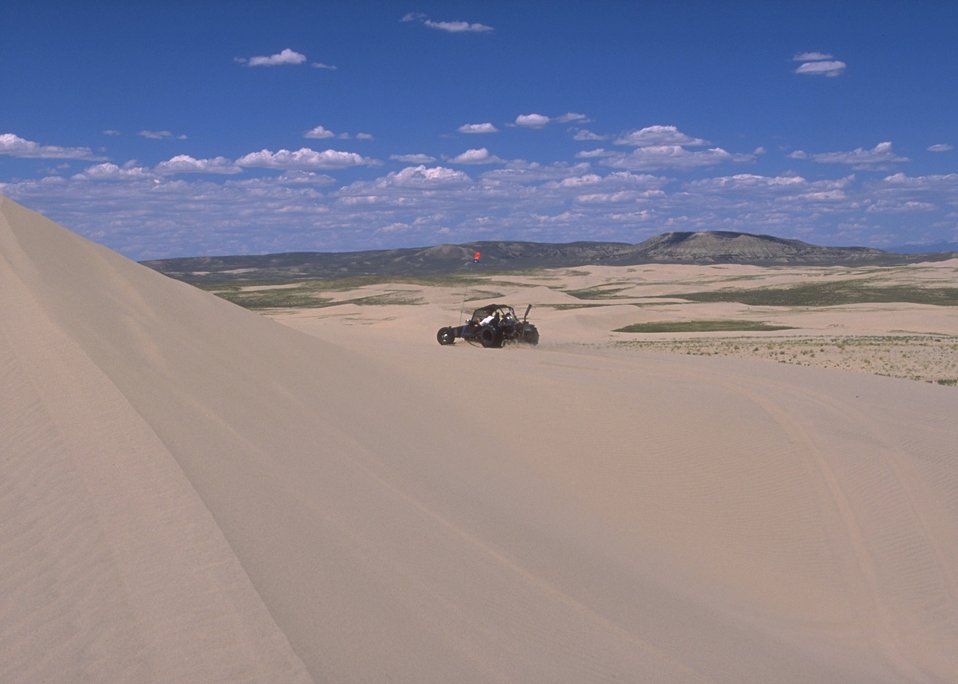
Sand Dunes OHV Area, Rock Springs Field Office.